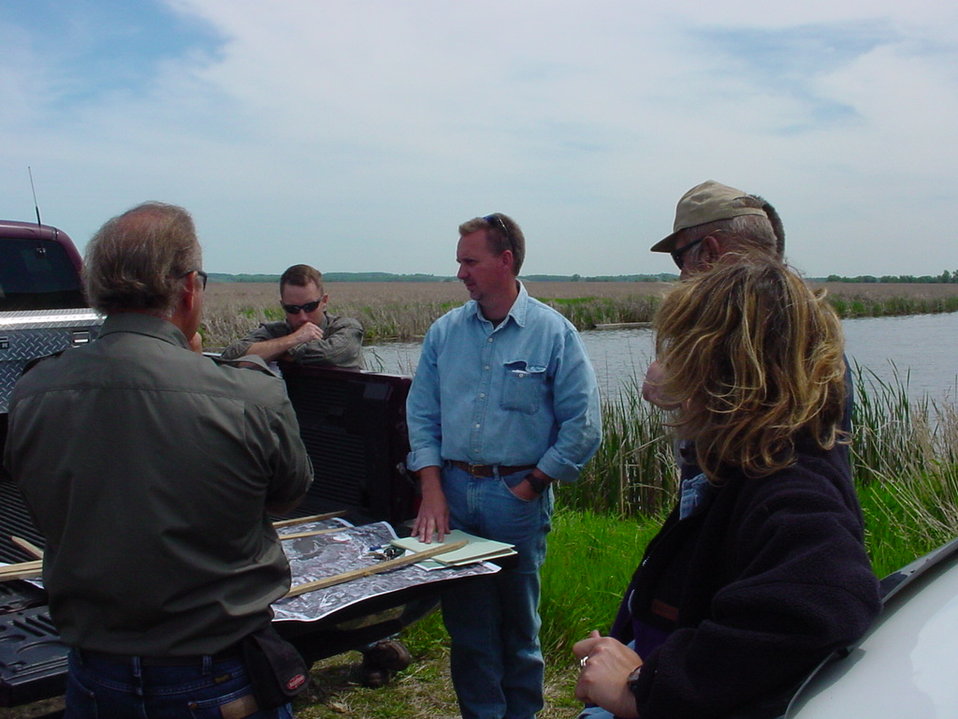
partners3